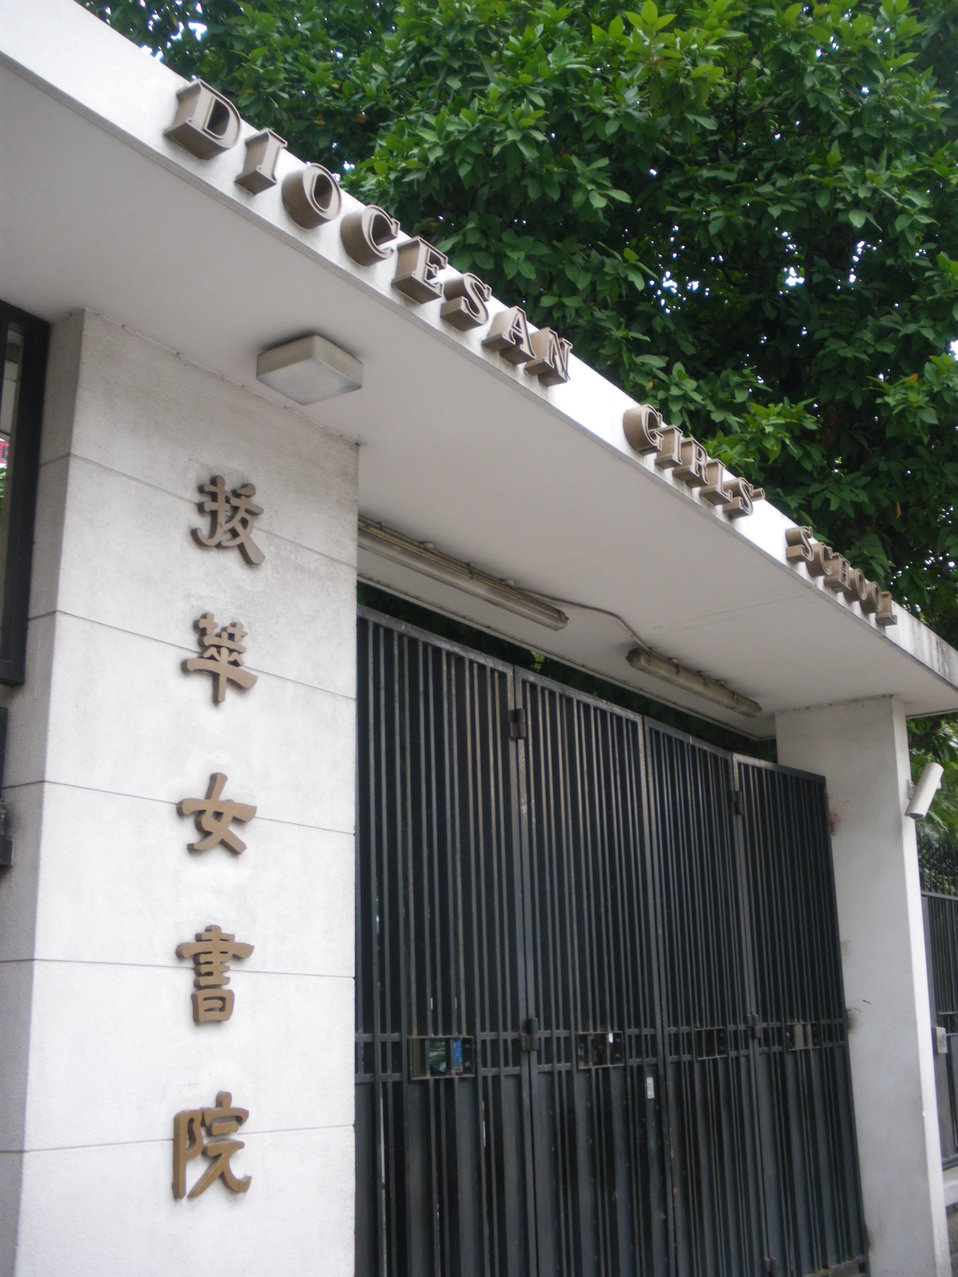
Diocesan Girls' School 中文: 拔萃女書院